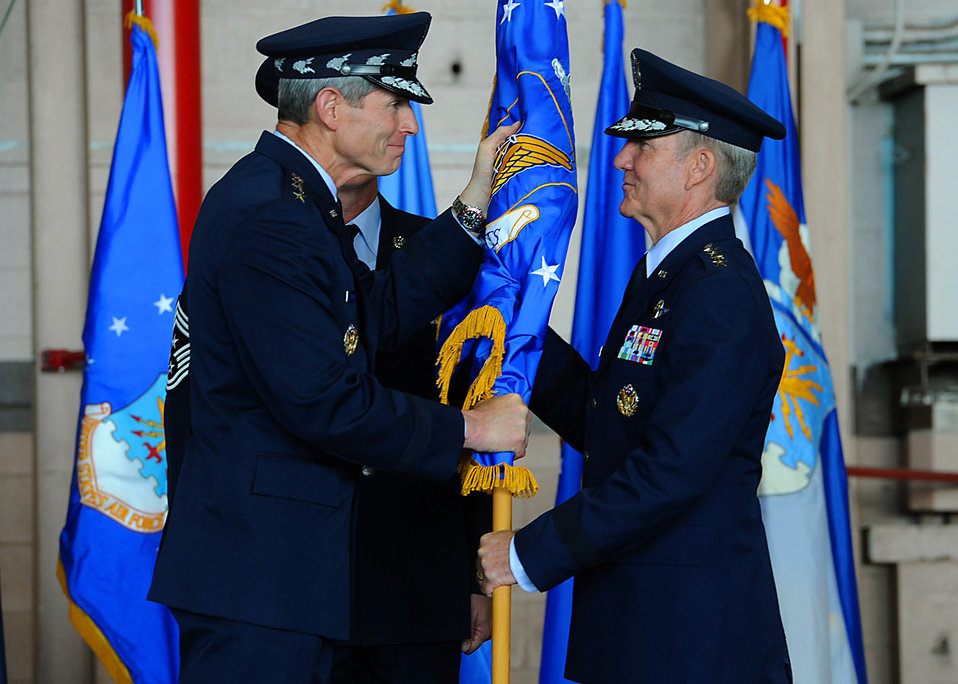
General Carlisle takes command of Pacific Air Forces

Air Force Chief of Staff Gen. Norton Schwartz presents the Pacific Air Forces flag to new PACAF commander Gen. Herbert Carlisle, signifying the transfer of command at Joint Base Pearl Harbor-Hickam, Hawaii, Aug. 3, 2012. Carlisle is the successor to Gen. Gary North, who is set to retire Oct. 1.